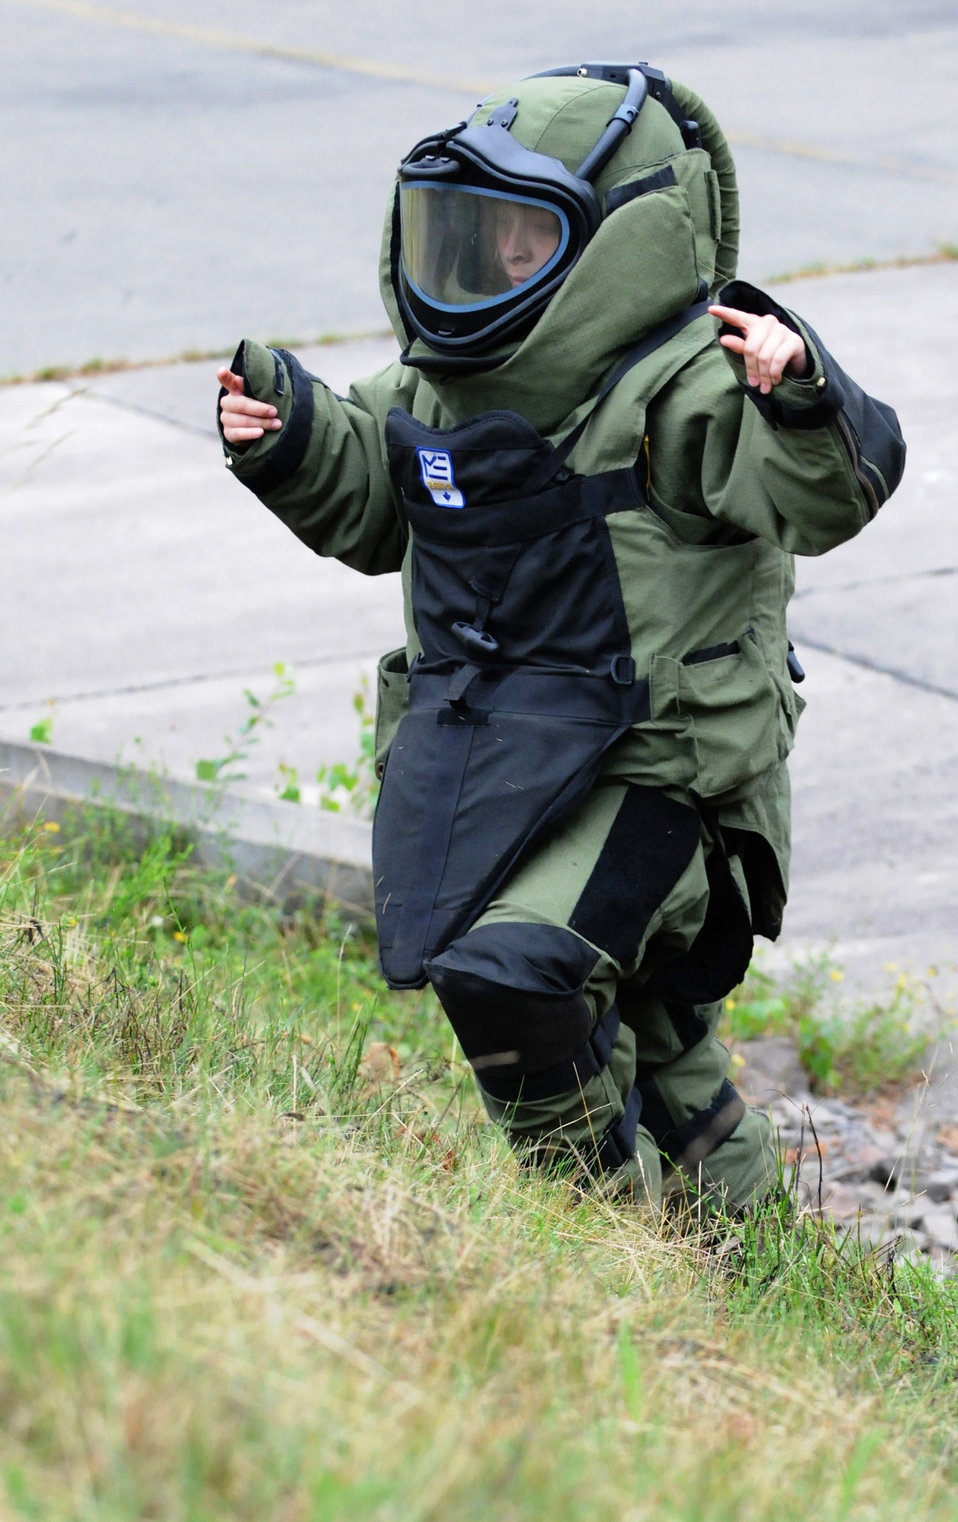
British cadets nurture 'spirit of adventure' at Ramstein

Royal Air Force Air Cadet Cpl. Charlotte Bennetts climbs a hill in an explosive ordnance disposal bomb suit that weighs approximately 75 lbs. during a July 14 visit to Ramstein Air Base, Germany. RAF cadets visited Ramstein AB for a week of leadership development and contingency skills training.